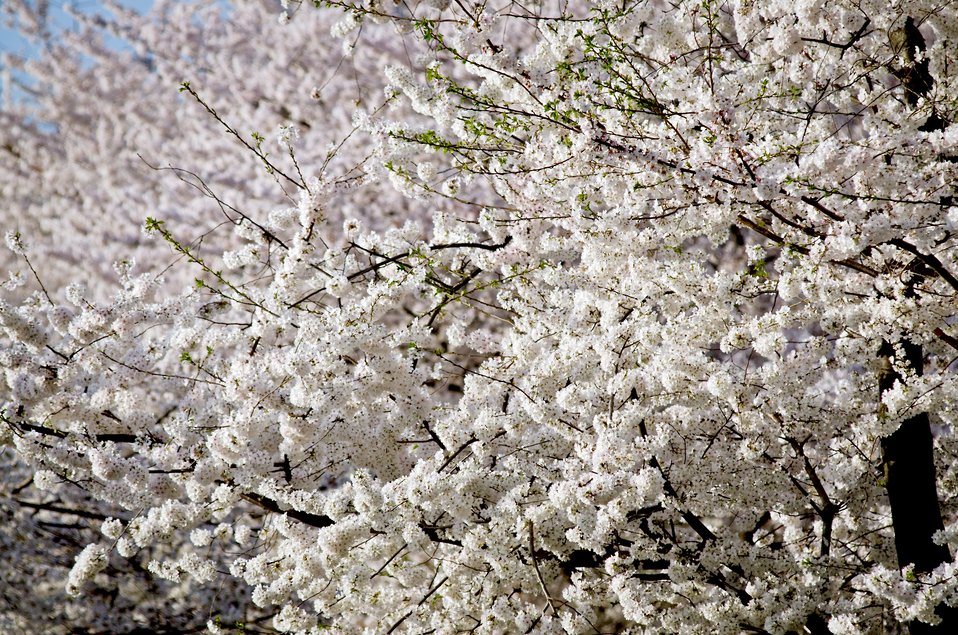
Cherry blossoms at the Tidal Basin in Washington, D.C., on Tuesday, March 20, 2012.